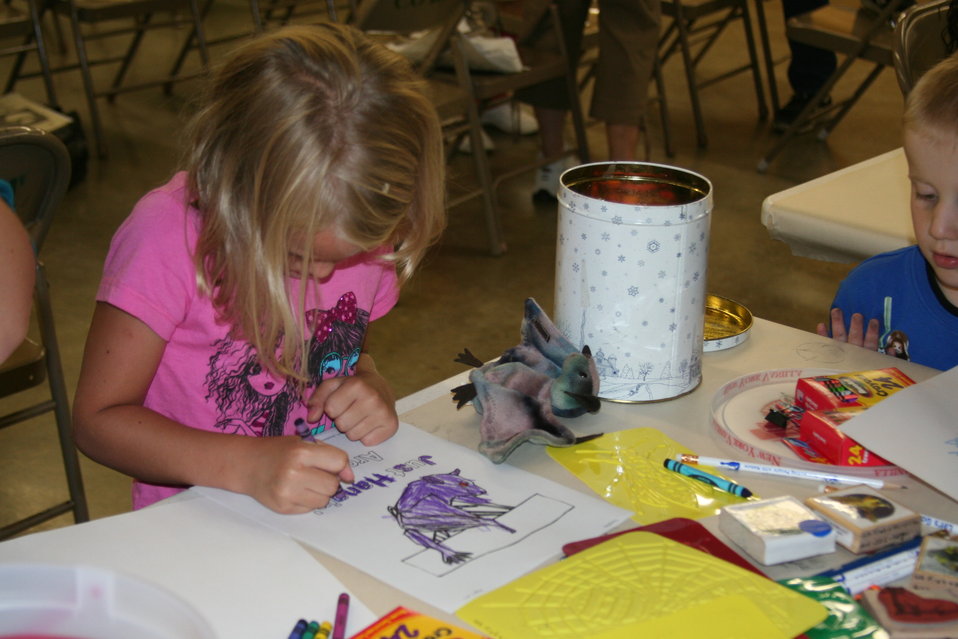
Creatures of the Night 2011

Coloring a bat....